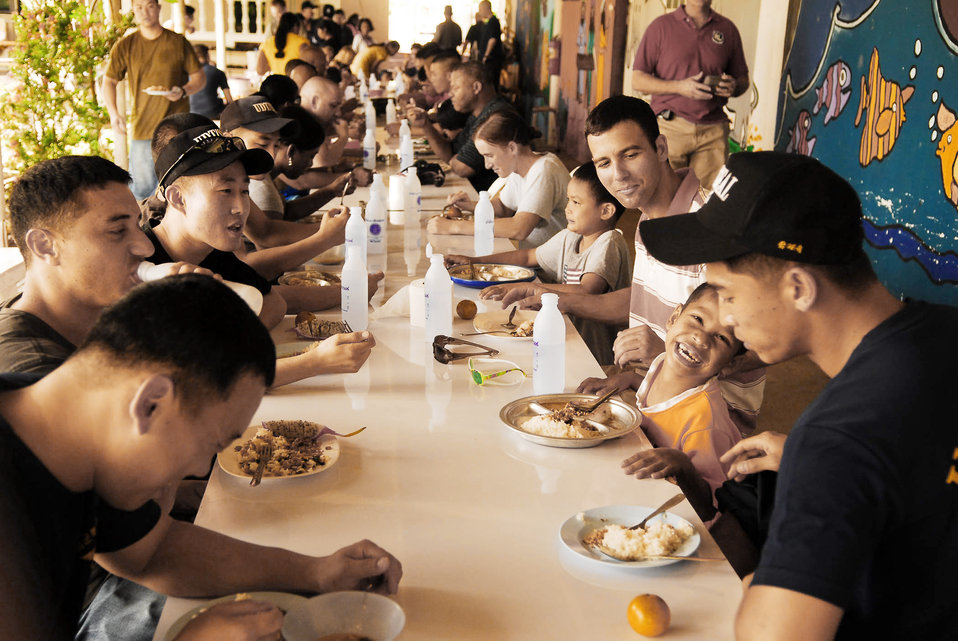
Airmen bring smiles to Thai orphans

Members of the U.S. Army and Air Force join South Korean marine corps and navy members for lunch with residents of an emergency center for small children during a joint military community relations project Jan. 30, 2010, in Pattaya, Thailand. The servicemembers played with the children, attended a lunch cooked by the center staff, and landscaped the area. The visit was part of Exercise Cobra Gold 2010.